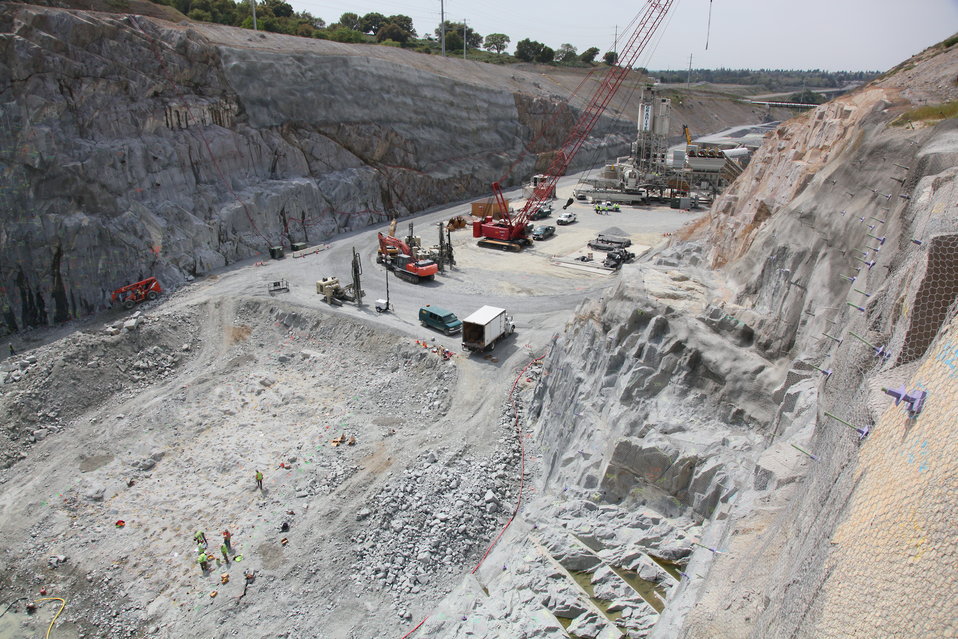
Corps completes final rock blasting for Folsom Dam spillway

Blasting crews place explosive charges in the Folsom Dam auxiliary spillway foundation in Folsom, Calif., April 9 in preparation for one of the final rock blasts to loosen rock and soil for removal. With the completion of rock blasting on April 13, daily road closures of Folsom Lake Crossing bridge are no longer required. “Thank you to everyone for your patience and for working with us during the road closures as we continue to work toward reducing flood risk for the Sacramento region,” resident engineer Jon Revolinsky said. The Sacramento District will now shift its focus to construction of the spillway's control structure, essentially a second dam. The spillway is scheduled to be ready for use in 2017 and will allow Folsom Dam to release water sooner and more safely, helping reduce flood risk for the Sacramento region.